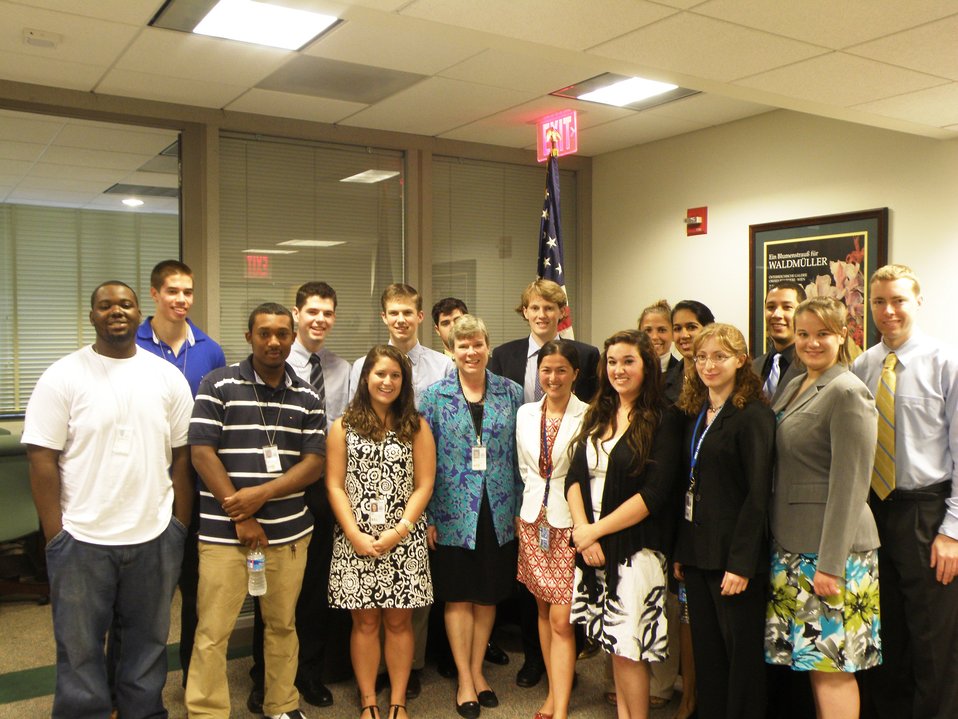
Assistant Secretary Gottemoeller Poses for a Photo With Summer Interns

U.S. Assistant Secretary of State for Verification, Compliance, and Implementation Rose Gottemoeller poses for a photo with Arms Control and International Security summer interns at the U.S. Department of State in Washington, D.C., on July 16, 2010.